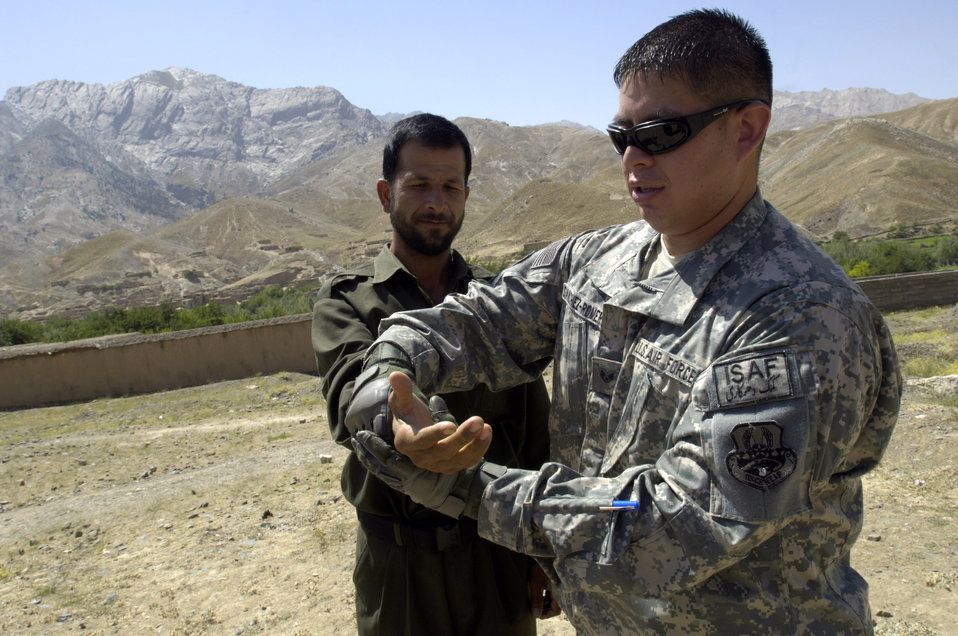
Airmen go hand-to-hand with Afghan National Police

Staff Sgt. Andre Sanchez-Romero demonstrates how to escape from a wrist lock to a member of the Afghan National Police Aug. 6. The security forces Airman, a member of the Panjshir Provincial Reconstruction Team, traveled with other PRT members to the Anaba district of Panjshir Province, Afghanistan, to provide training to ANP working in the district. Sergeant Sanchez-Romero is deployed from Minot Air Force Base, N.D.